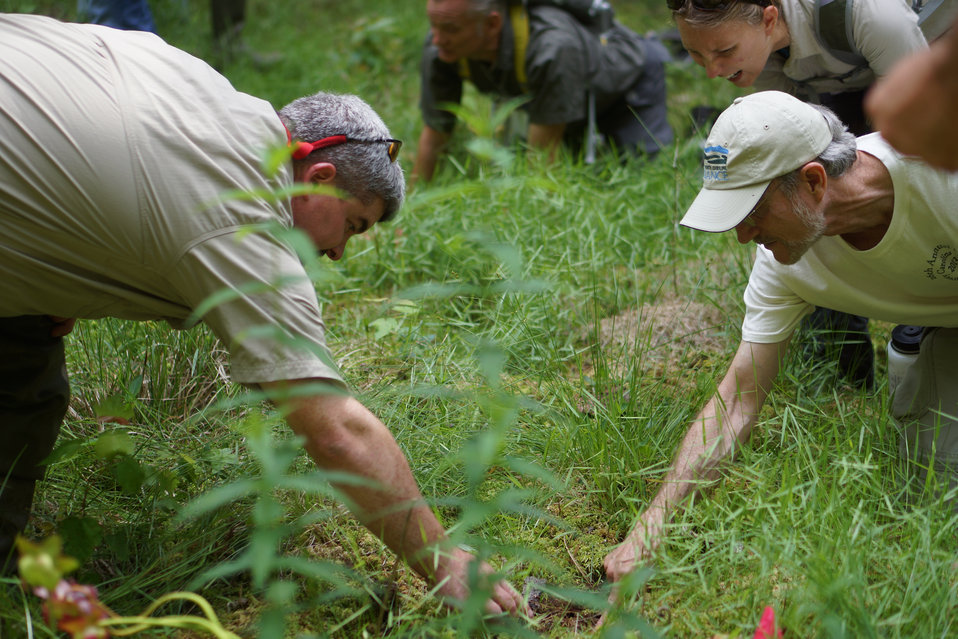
Thomas Floyd and Bob Gale

In May, bog conservationists from Tennessee, North Carolina, and Georgia convened in the north Georgia mountains for the spring, 2014 meeting of the Bog Learning Network. The event provided an opportunity for biologists to see, first hand, the result of management efforts at two north Georgia bogs. More importantly, the outings provided an opportunity to share innovative approaches to bog management, such as the role of the Georgia Plant Conservation Alliance in conserving rare plants and coordinating a cadre of volunteers to work on bog management.

The Bog Learning Network was convened in the winter of 2013 as a way to bring together people working for bog conservation across the Southern Appalachians. Southern Appalachian bogs are one of North America’s rarest habitats and home to many rare plants and animals.